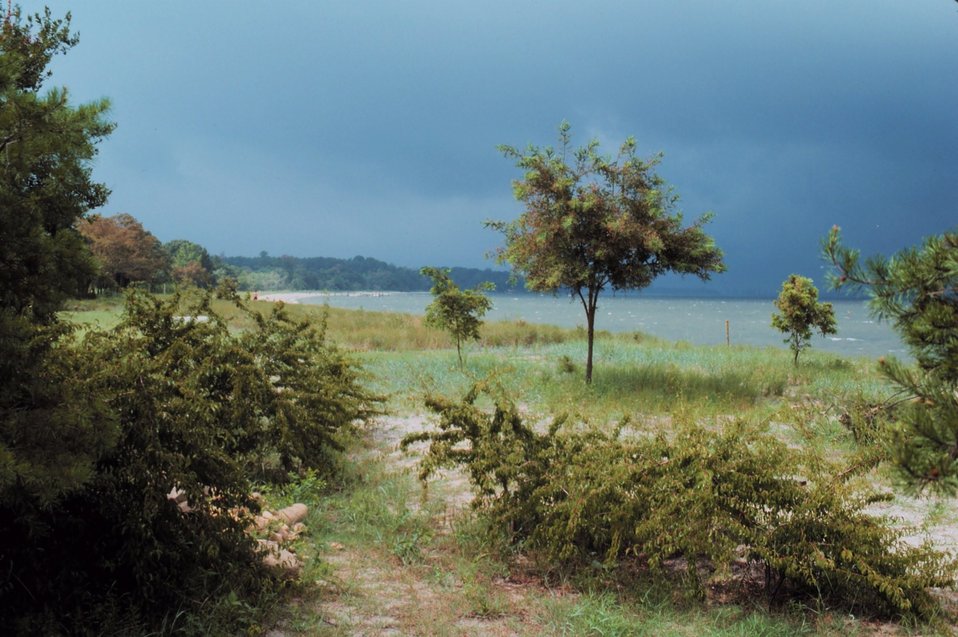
A storm is brewing on the lower Patuxent River. Shoreline includes sand, grass, and brush.